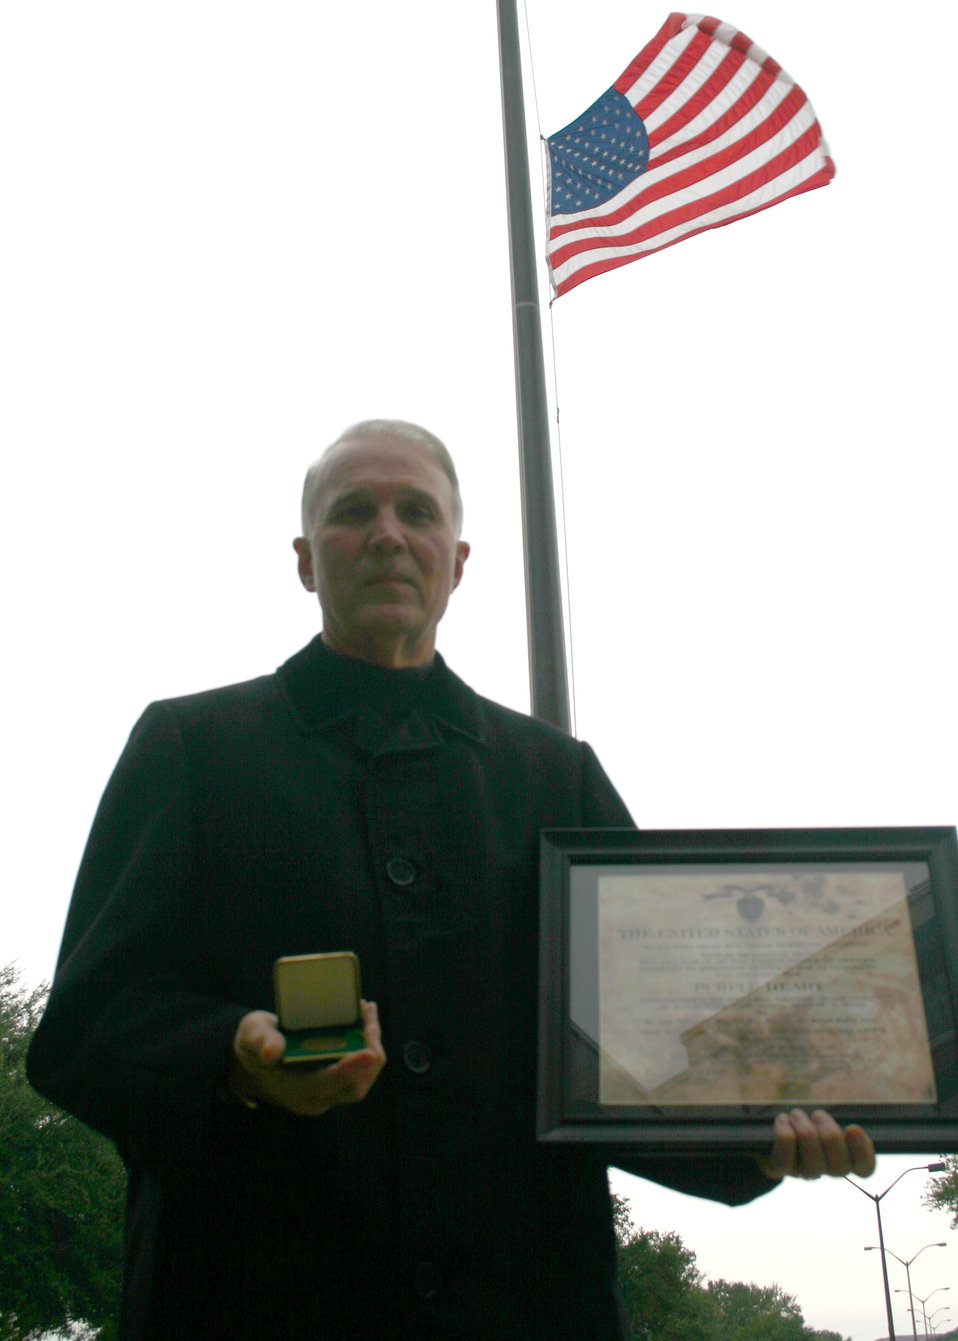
Remembering a day of infamy

LACKLAND AIR FORCE BASE, Texas (AFPN) -- David McGlasson, 59th Clinical Research Squadron clinical research scientist, stands before the 59th Medical Wing flag as it flies at half staff Thursday in commemoration for those who lost their lives during the bombing of Pearl Harbor Dec. 7, 1941. Mr. McGlasson holds the Purple Heart certificate and commemorative coin given to his family in honor of his uncle, U.S. Navy Petty Officer 3rd Class (Gunners 3rd Mate) Otis McGlasson, who died aboard the USS Arizona that day. His uncle was 24 years old. Mr. McGlasson has always felt a special kindred spirit with his uncle, he said, having been born on Dec. 7, 1946, at the same time as the sinking of the USS Arizona.